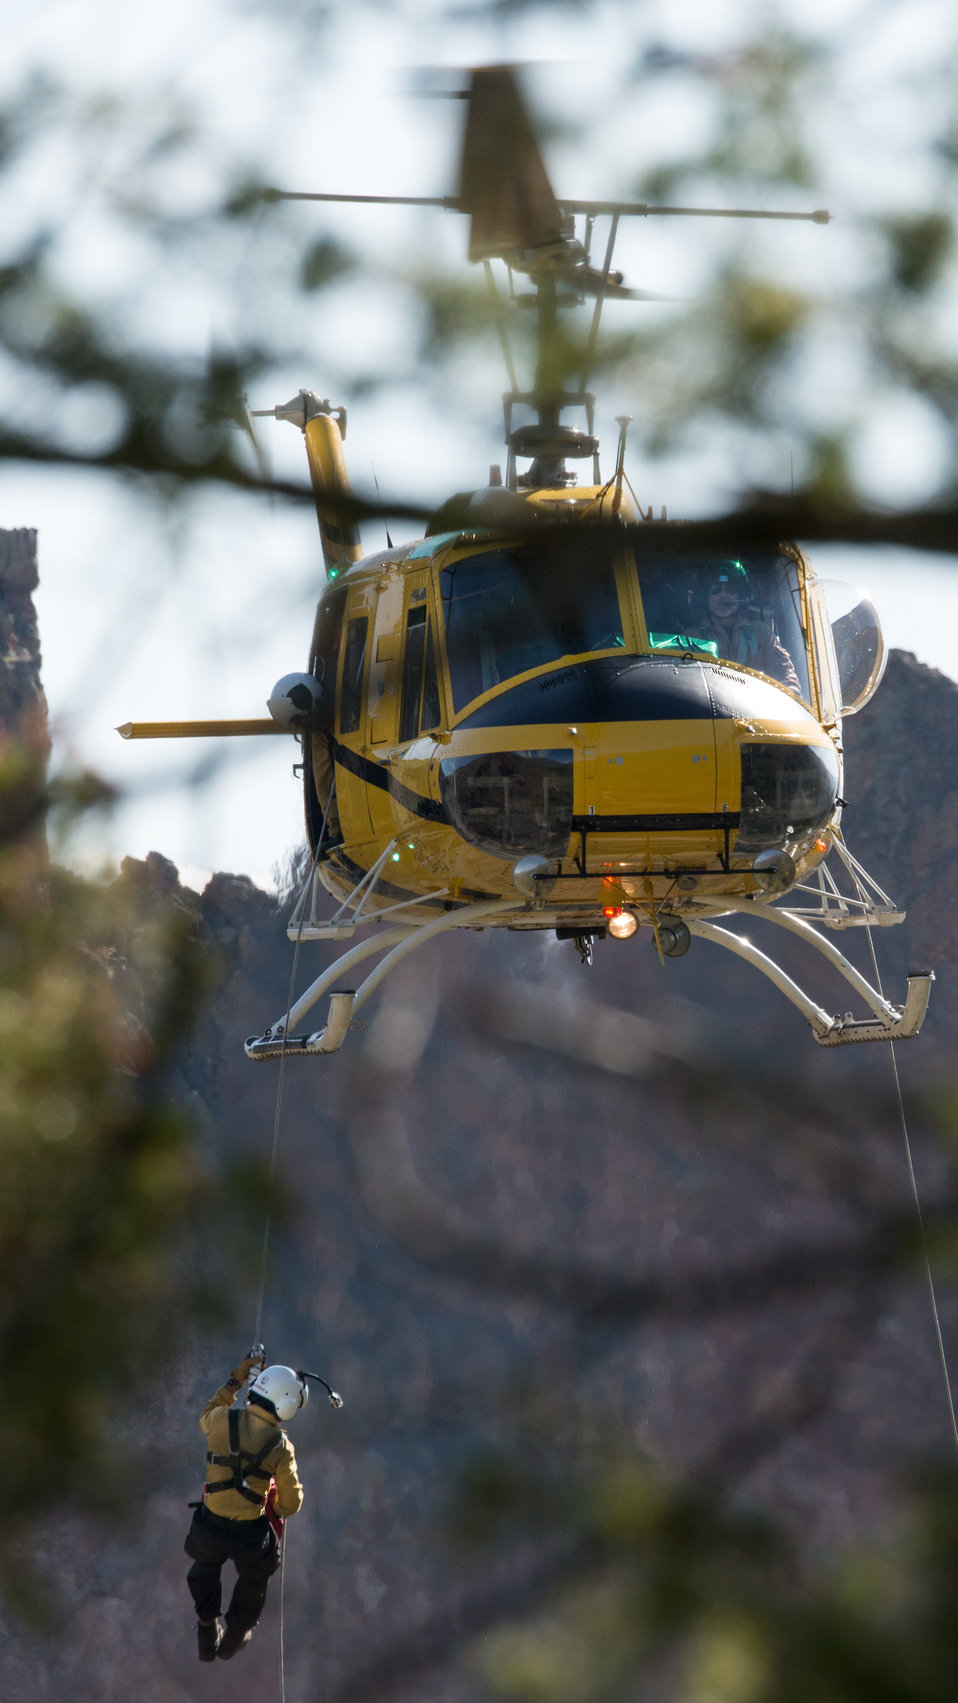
An Express's Bell 205A-1 Helicopter maintains altitude and position, both critical, for veteran wildland firefighter rappellers to descend to a landing zone in the Perreau Creek area, during the U.S. Department of Agriculture (USDA), U.S. Forest Service (USFS) National Helicopter Rappel Program’s Rappel Academy at Salmon Air Base, in Salmon, Idaho, on Thursday, May 15, 2014.